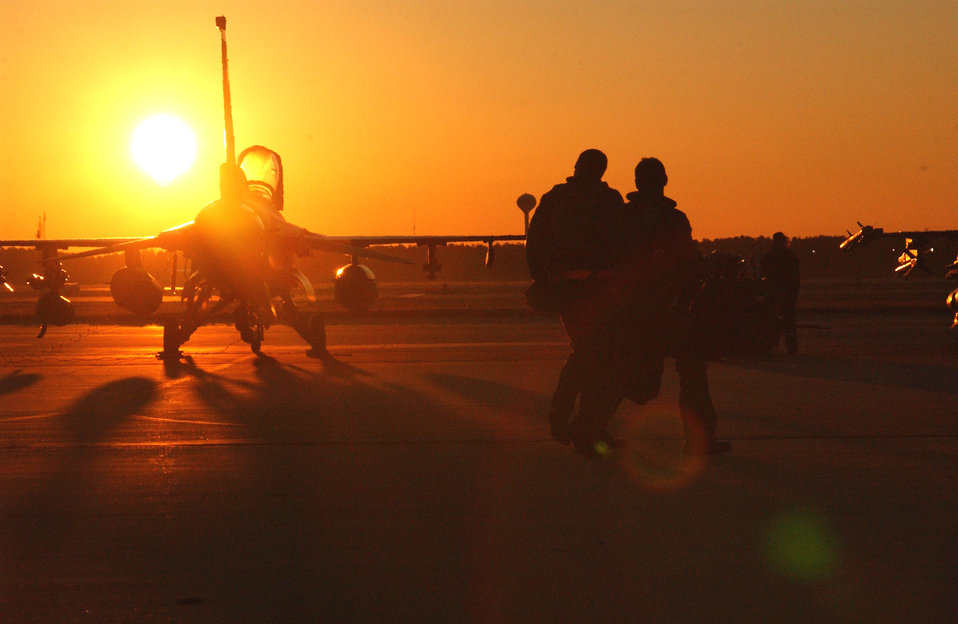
Exercising Falcons

Members of the 20th Fighter Wing generate an F-16 Fighting Falcon in support of Operational Readiness Exercise Sea Lion 07-03 Jan. 26 at Shaw Air Force Base, S.C. Exercises prepare Airmen for future deployments.